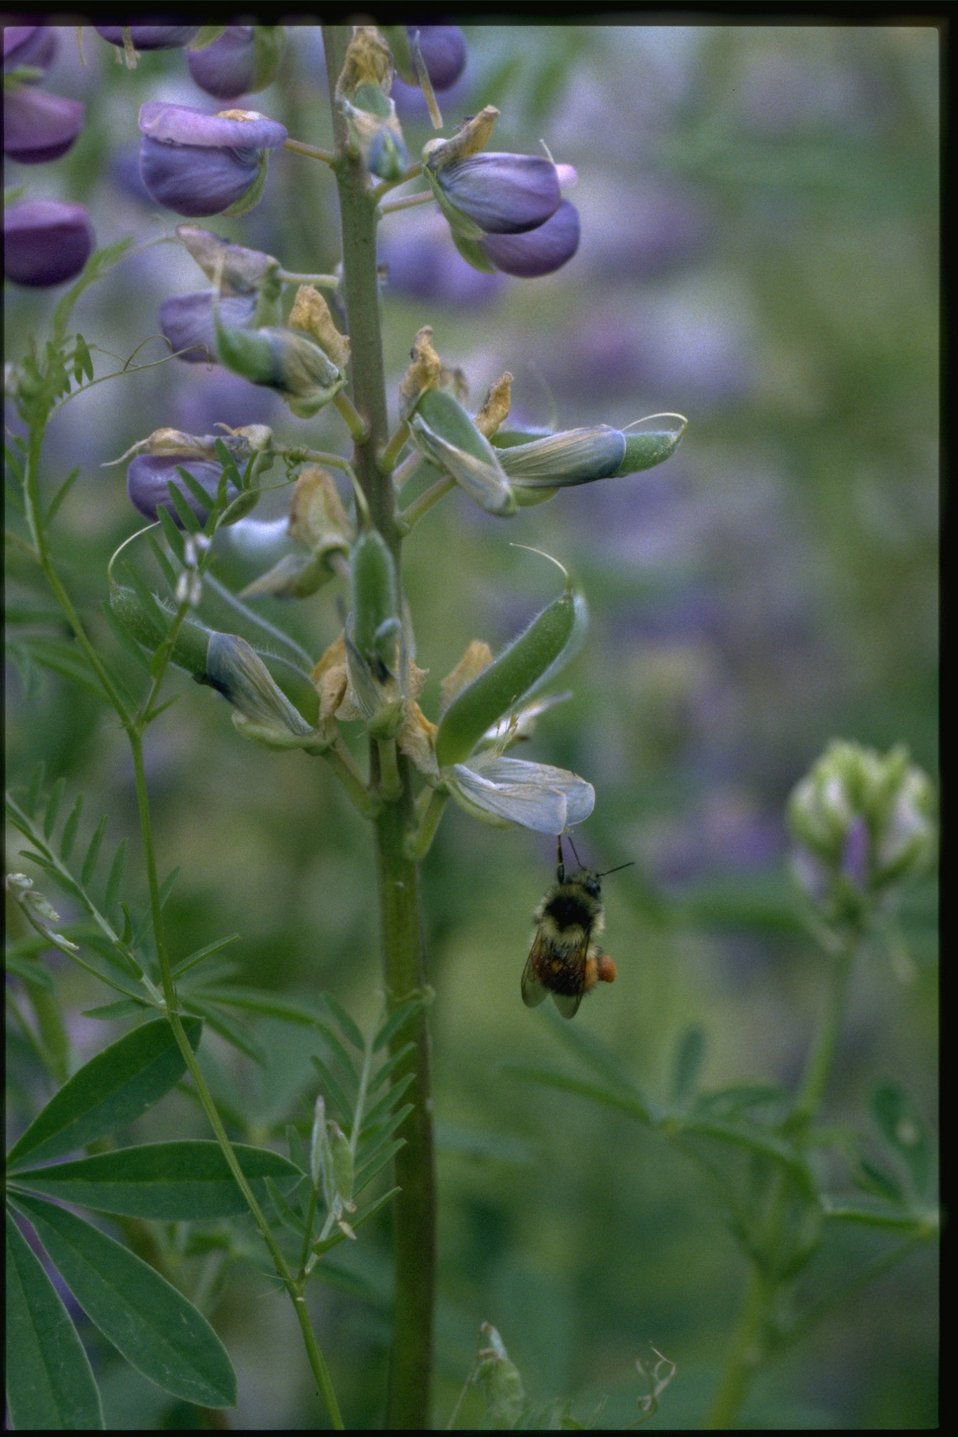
Closeup shot of lupine wildflower (Lupinus arcticus).